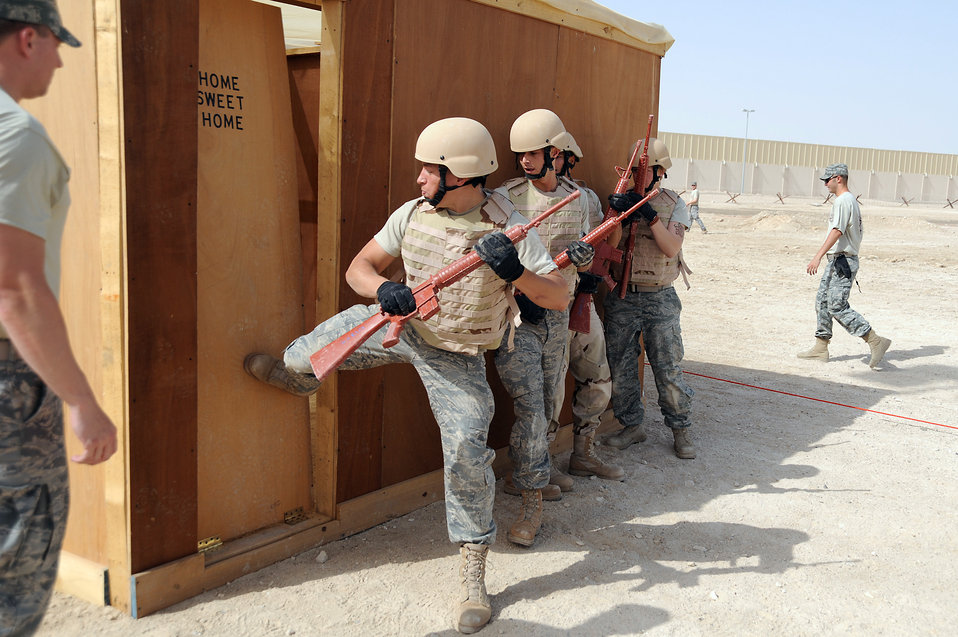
Challenge pushes Airmen, Soldiers

Senior Airman Matthew McCarthy kicks down a door on a tactical entry trainer as Staff Sgt. Cory Bobo, Senior Airman Paulo Giraldo and Senior Airman Erin Kinney wait to enter during a Defender Challenge course April 25 at an air base in Southwest Asia. At the end of the course, the team would have to identify everything they saw inside to earn points toward their score. Airman McCarthy, Sergeant Bobo and Airman Giraldo are with the 380th Expeditionary Civil Engineer Squadron and Airman Kinney is with the 380th Expeditionary Security Forces Squadron. The team won the competition beating out the second place team by one second. Airman McCarthy is deployed from Bolling Air Force Base, D.C., and hails from Omaha, Neb. Sergeant Bobo is deployed from Aviano Air Base, Italy and hails from Athens, Ohio. Airman Giraldo is deployed from Bolling AFB and hails from Revere, Mass. Airman Kinney is deployed from Tinker AFB, Okla., and hails from Austin, Texas.